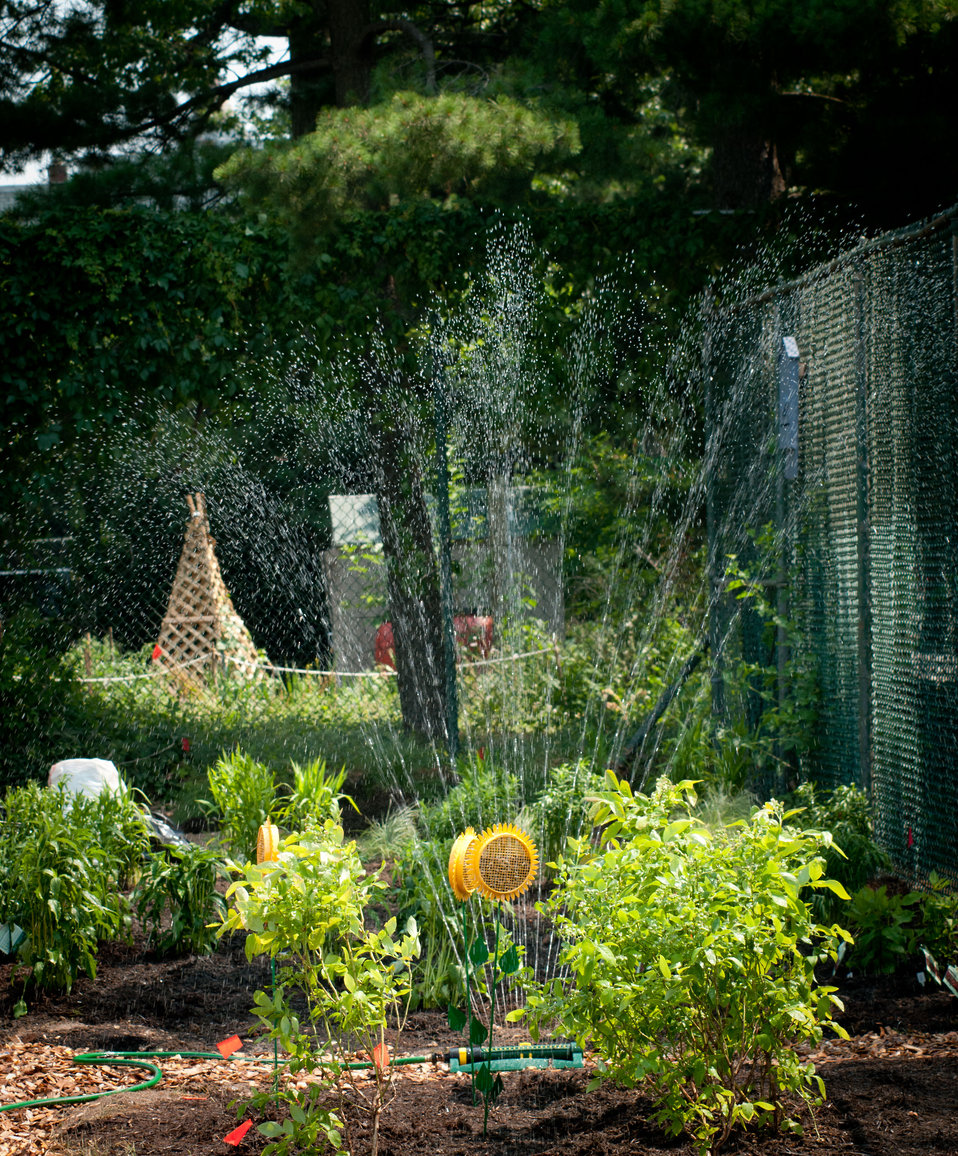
The completed portion of the People’s Garden at William B. Powell Elementary School is given it’s first watering on Thursday, June 9, 2011 in Washington, DC. Volunteers from U.S. Department of Agriculture People’s Garden Executive Master Gardener program and Washington Capitals hockey organization, along with defenseman Jeff Schultz, and mascot Slapshot transformed a grassy corner of the Powell Elementary School playground into a habitat garden and outdoor learning area. The 100 degree heat index and harder than expected soil, contributed to only 60% of the planned projects being completed. The completed projects included a walking path; tiling of garden plots; planting a monarch butterfly watch garden; caterpillar and butterfly plaques; hummingbird and bat houses, and tool shed. The garden will later include a picnic area, outdoor classroom, hummingbird garden, bird habitat, and native bee garden, and birdbath. Executive Master Gardeners led the volunteer project teams. USDA challenges its employees to establish People's Gardens at USDA facilities worldwide or on this case, help communities create gardens. People's Gardens vary in size and type, but all have a common purpose - to help the community and the environment.